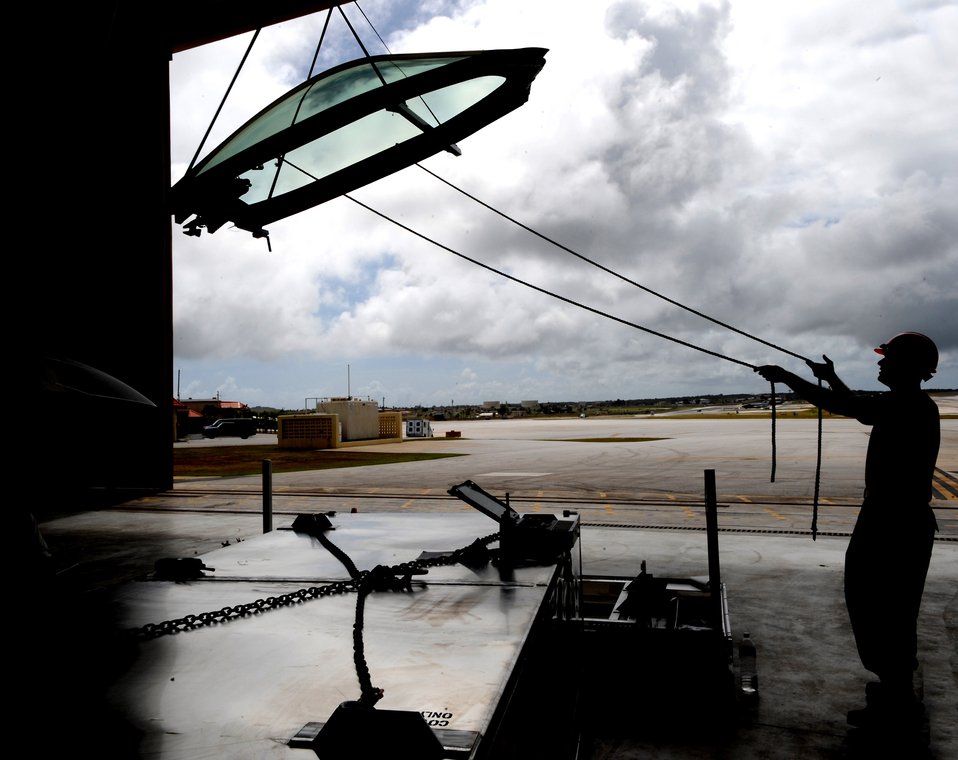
Egress technicians keep Raptors covered

Senior Airman Ryan Ott positions an F-22 Raptor canopy using an east-west hoist Feb. 18 at Andersen Air Force Base, Guam. The Raptors are deployed from Elmendorf AFB, Alaska, to Guam for three months as the Pacific's theater security package. The base has received 12 of the $140 million dollar aircraft, and more than 250 Airmen as the theater security package. As part of the continuing force posture adjustments to address worldwide requirements, the United States continues to deploy additional forces like the F-22 throughout the Western Pacific. This is the latest example of the flexibility U.S. forces have to meet their ongoing commitments and security obligations throughout the Pacific region. Airman Ott is an egress technician deployed from Elmendorf AFB and assigned to 36th Expeditionary Maintenance Squadron.